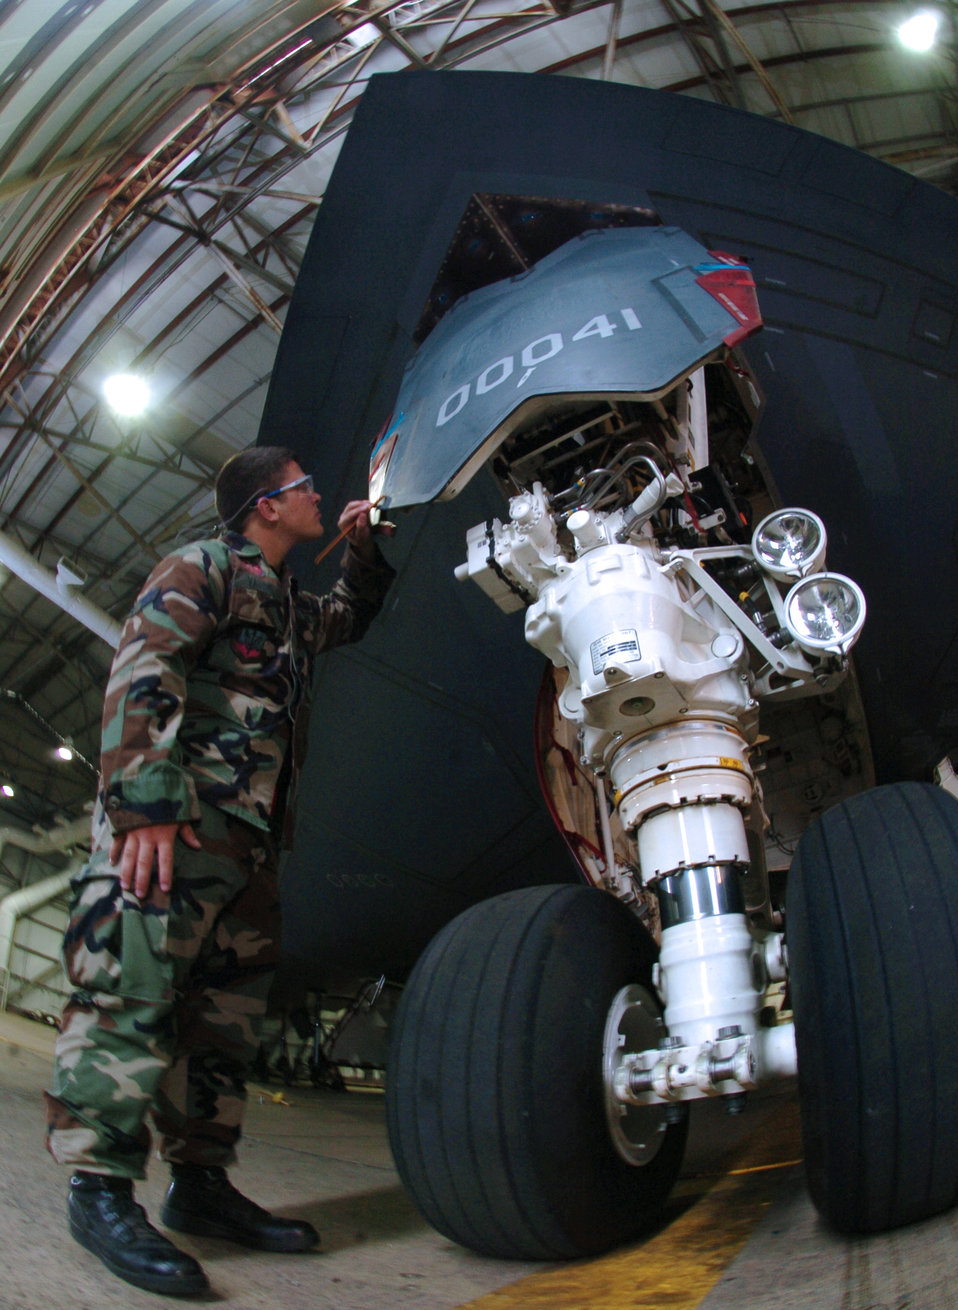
Missouri Airmen welcome challenge to keep B-2 safe

ANDERSEN AIR FORCE BASE, Guam -- Senior Airman Bruce Vaughn looks for scratches or chipped paint on a B-2 Spirit bomber deployed here. The Spirit's skin has to be kept in pristine condition to help maintain its stealth qualities. Airman Vaughn is a low observable technician from the 509th Maintenance Squadron at Whiteman Air Force Base, Mo.